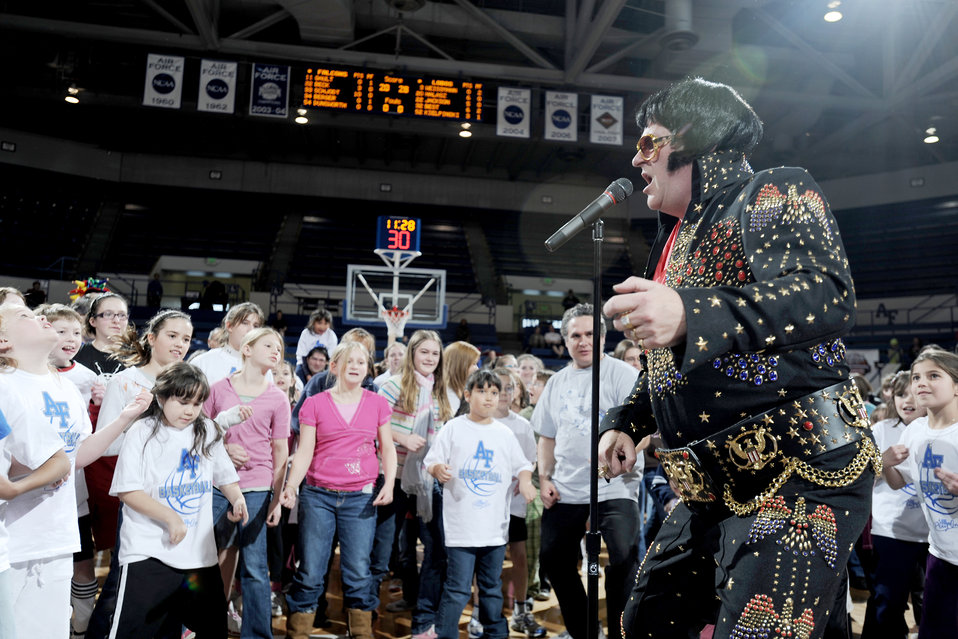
Photo essay: Academy women?s basketball falls to New Mexico

Elvis impersonator Bruce Black sings ?Blue Suede Shoes? while playing air guitar with the fans of the U.S. Air Force Academy women?s basketball game as part of an attempt to break the world group air guitar record Feb. 20, 2010, at Clune Arena in Colorado Springs, Colo. While there were 956 air guitarists participating at the game, they were not able to break the record of 1,436 set by the University of Ontario, Canada.